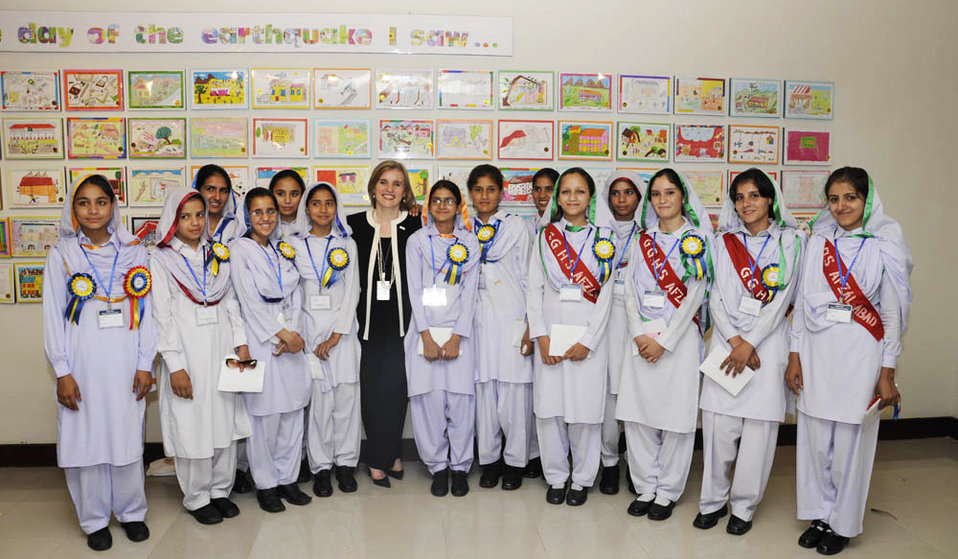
Photography and Drawing Exhibition on Pakistan 2005 Earthquake “Rebuilding Together: With Dignity and Hope”

Group photo of winner students of a photo contest organized by USAID. USAID organized a photo exhibition on Pakistan 2005 earthquake “Rebuilding Together: With Dignity and Hope” at Pakistan National Council of Arts (PNCA) in Islamabad.